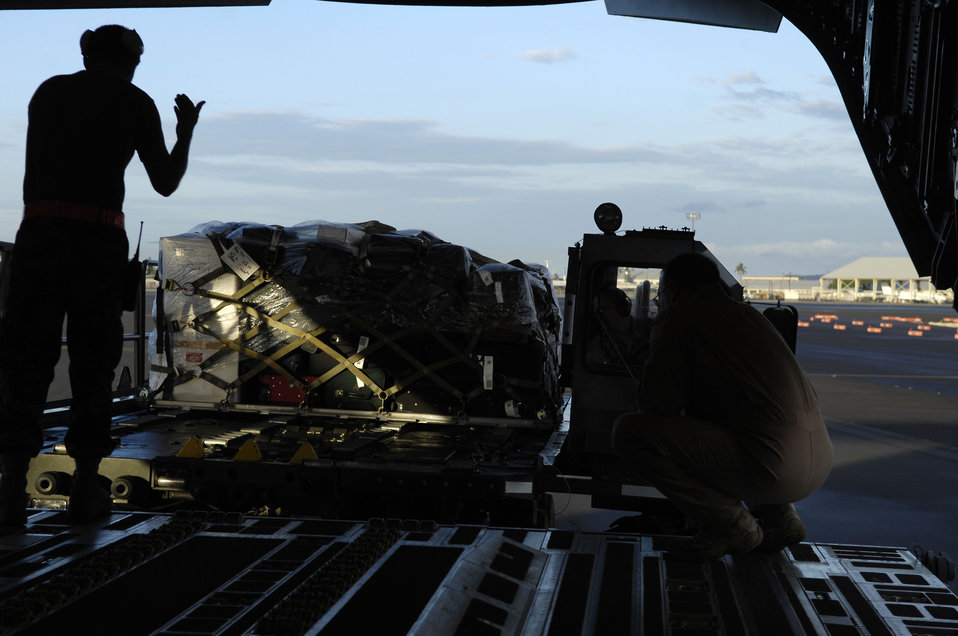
C-17 Reaches Across the Globe

Airmen of Hickam Air Force Base, Hawaii's Passenger terminal and C-17 loadmasters from the 15th Operation Support Squadron load luggage onto the jet on Dec. 17, 2008. The jet will transport supplies from Andersen and Kadena Air Bases to Afghanistan.